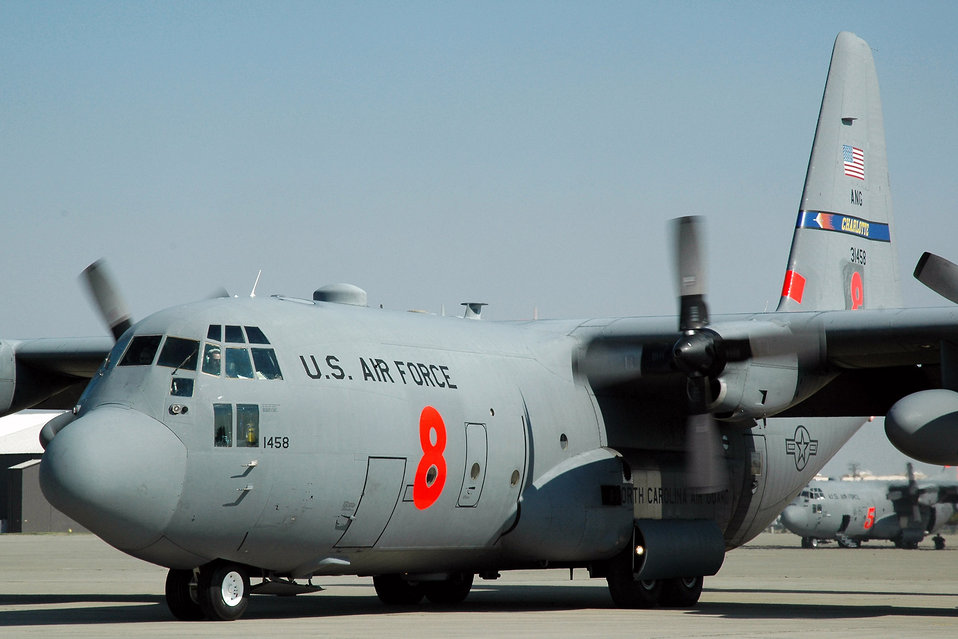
Maintainers keep C-130's flying during wildfire operations

A C-130 Hercules assigned to the North Carolina Air National Guard's 145th Airlift Wing taxies down the ramp at McClellan Airfield in Sacramento, Calif., after completing a successful mission of dropping fire retardant on the Piute fire burning in California's Sequoia National Forest. Aircrews and maintainers from the 145th AW are in California to assist with firefighting operations as part of the 302nd Air Expeditionary Group.